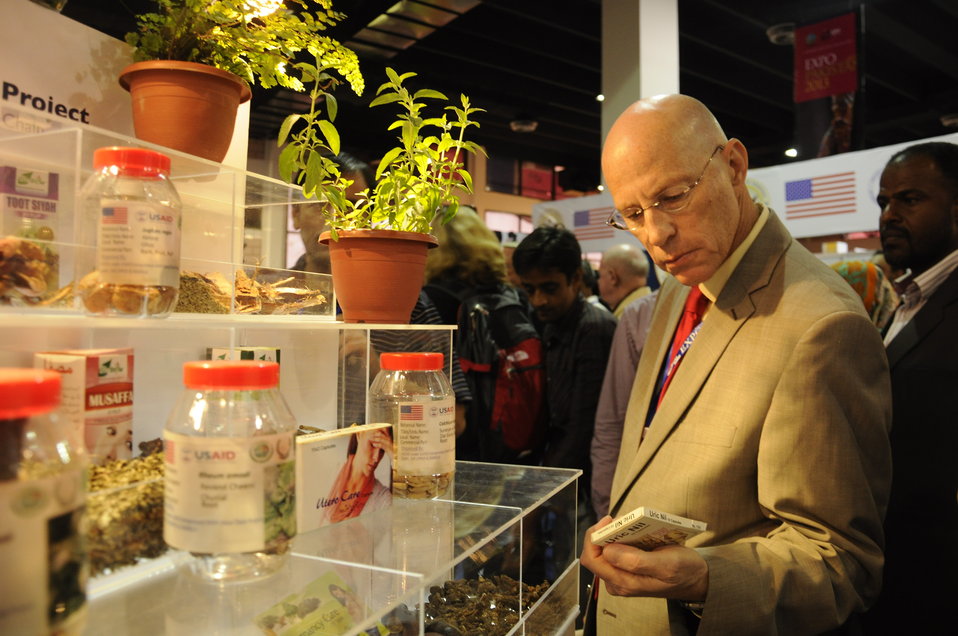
Gregory Gottlieb, U.S. Agency for International Development's Mission Director for Pakistan, looking at Medicinal and Aromatic Plants at USAID's Entrepreneurs Project Stall